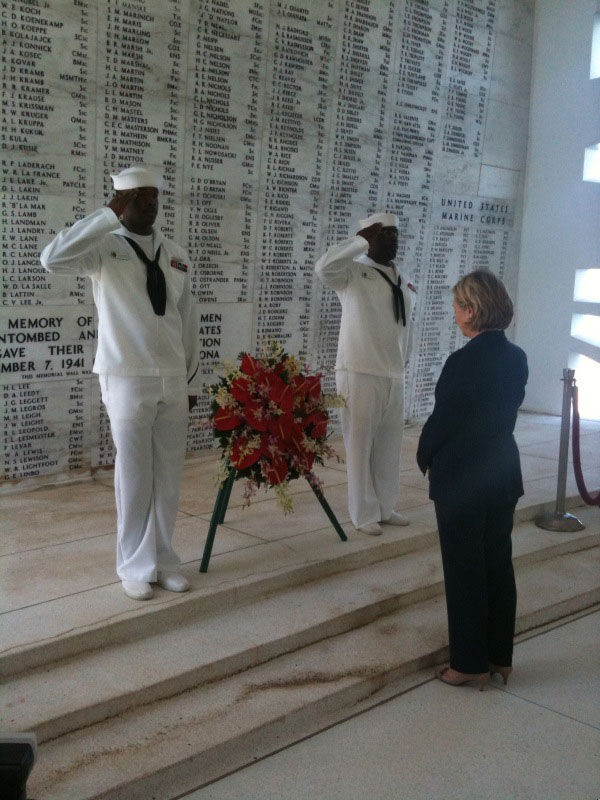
Secretary Clinton at Pearl Harbor

U.S. Secretary of State Hillary Rodham Clinton visits Pearl Harbor War Memorial, Hawaii, Jan. 12, 2010.